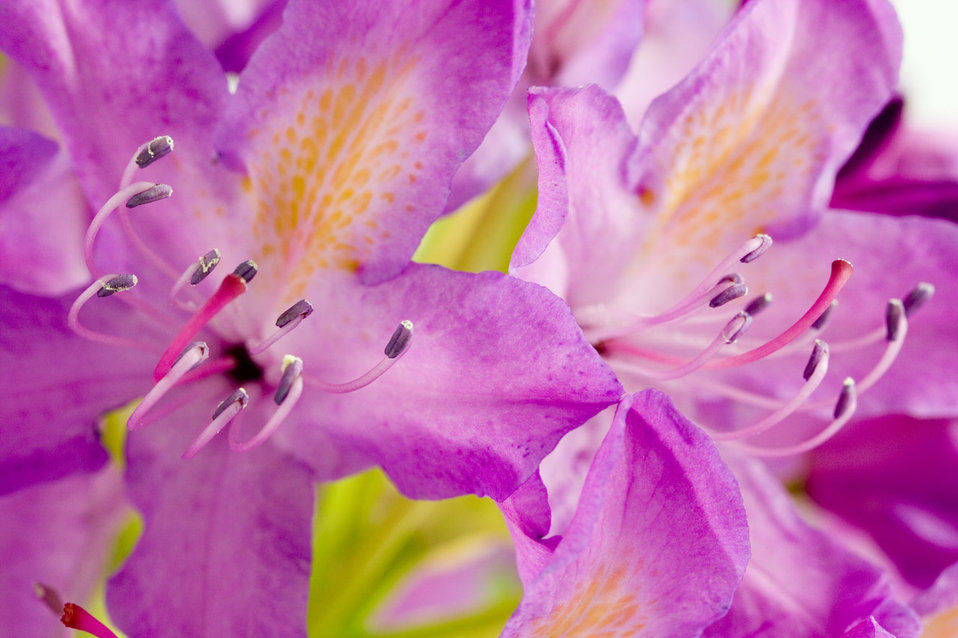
Rhododendron

Macro photo of rhododendron flower.